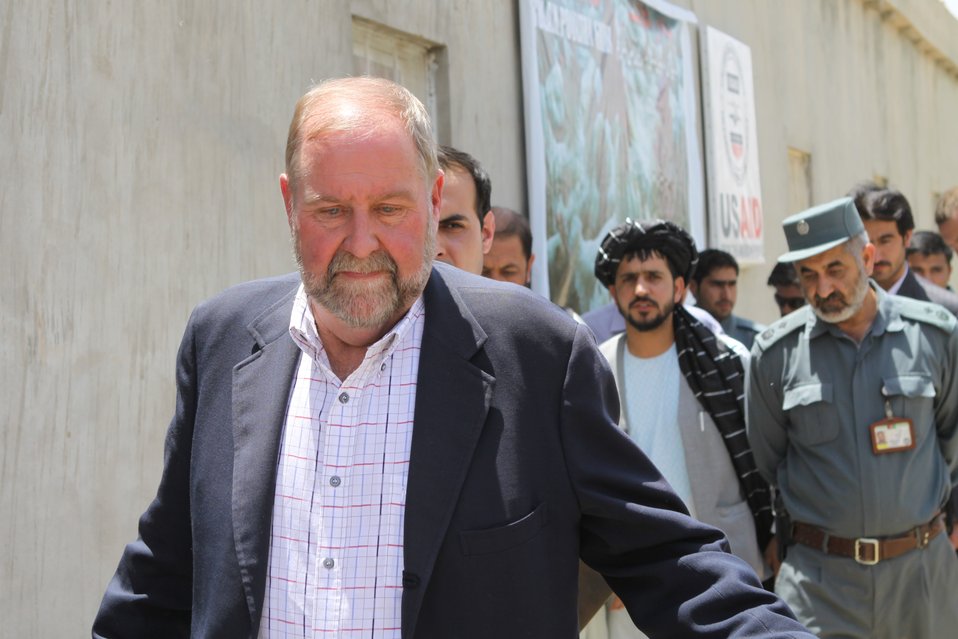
Bolan Poultry Farm